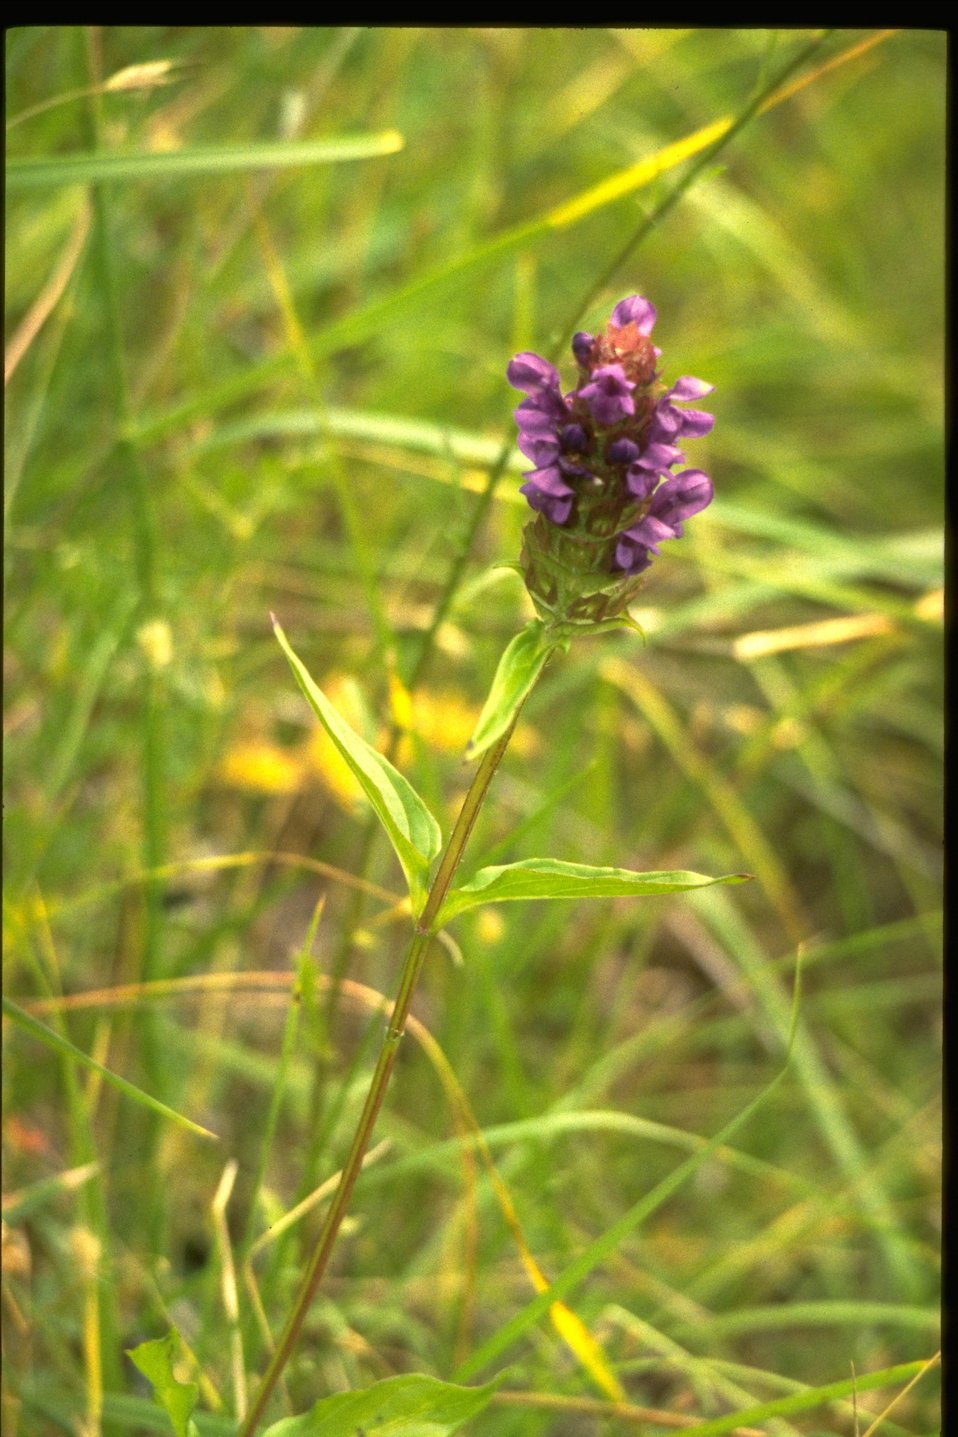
Medium shot of Prunella vulgaris.